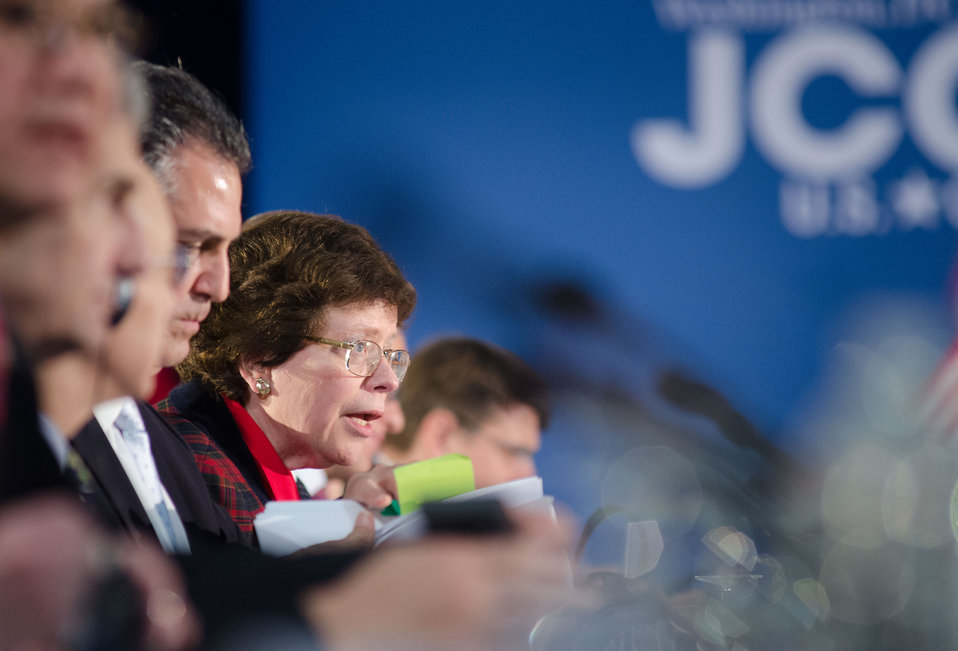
Acting U. S. Commerce Secretary Rebecca Blank (center) makes opening remarks to the 23rd Session of the U.S. China Joint Commission on Commerce and Trade (JCCT) at the Andrew W. Mellon Auditorium in Washington, D.C. on Wednesday, Dec. 19, 2012. The JCCT holds high-level plenary meetings on an annual basis to review progress made by working groups that focus on a wide variety of trade issues. These working groups meet throughout the year to address topics such as intellectual property rights, agriculture, pharmaceuticals and medical devices, information technology, tourism, commercial law, environment, and statistics.